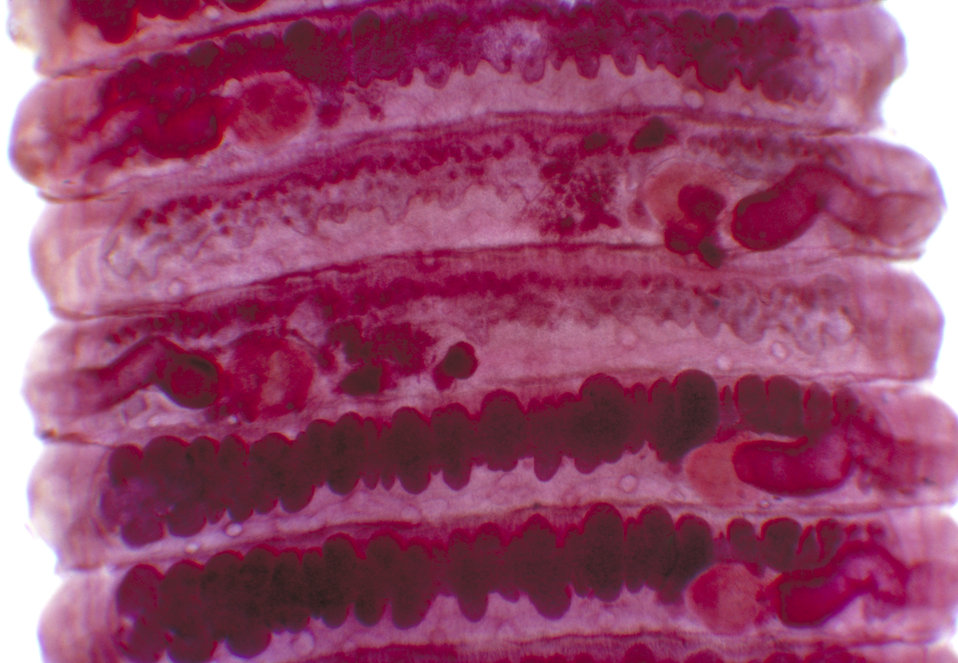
Proglottids of human tapeworm Bertiella studeri. Parasite.